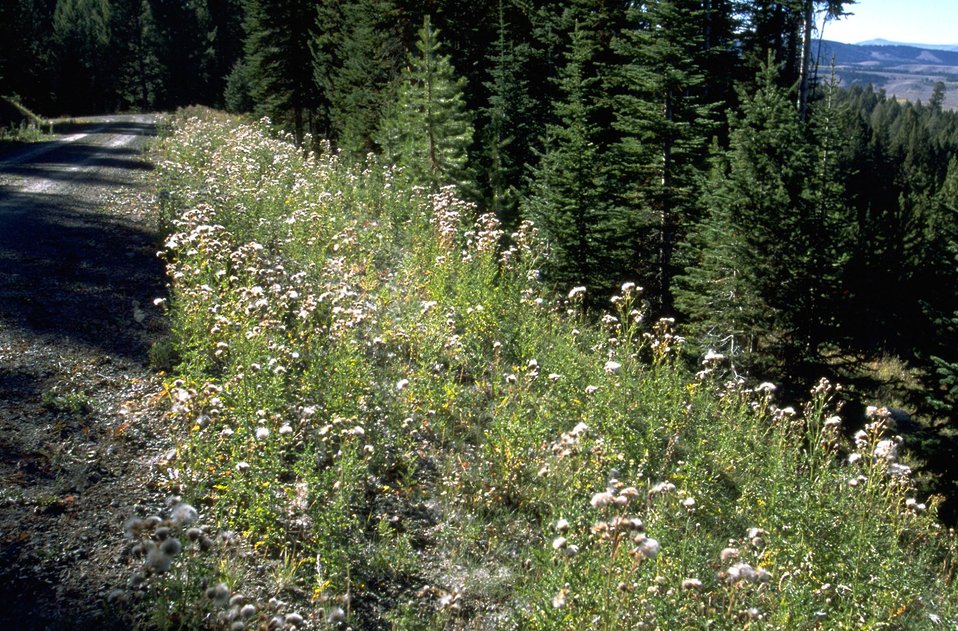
Wildflowers on road fill